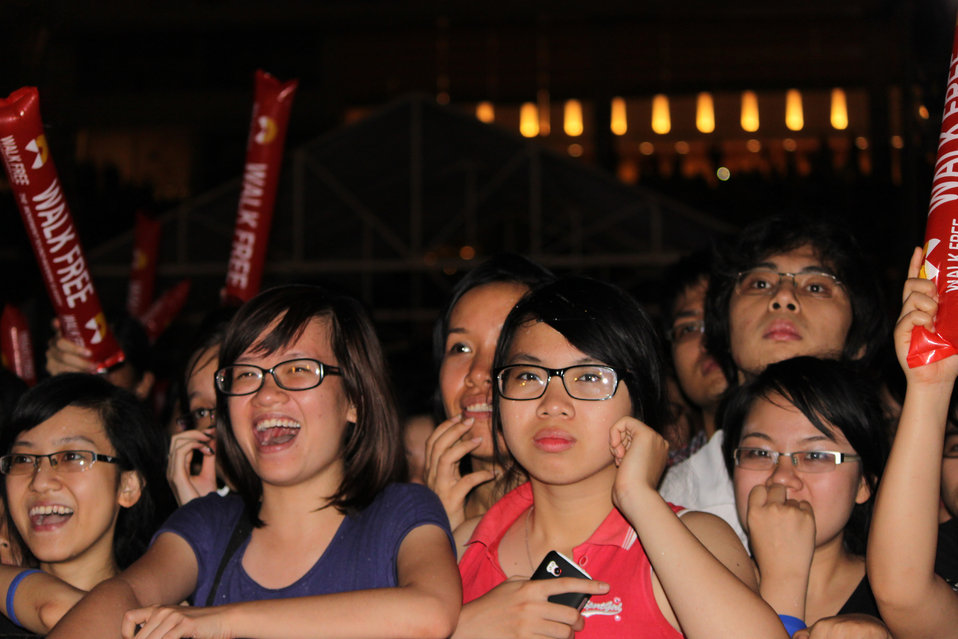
Young fans are so excited the MTV Exit concert with strong messages against human trafficking

A great concert that attracts 40,000 fans in My Dinh Stadium in Hanoi with strong messages against human trafficking.